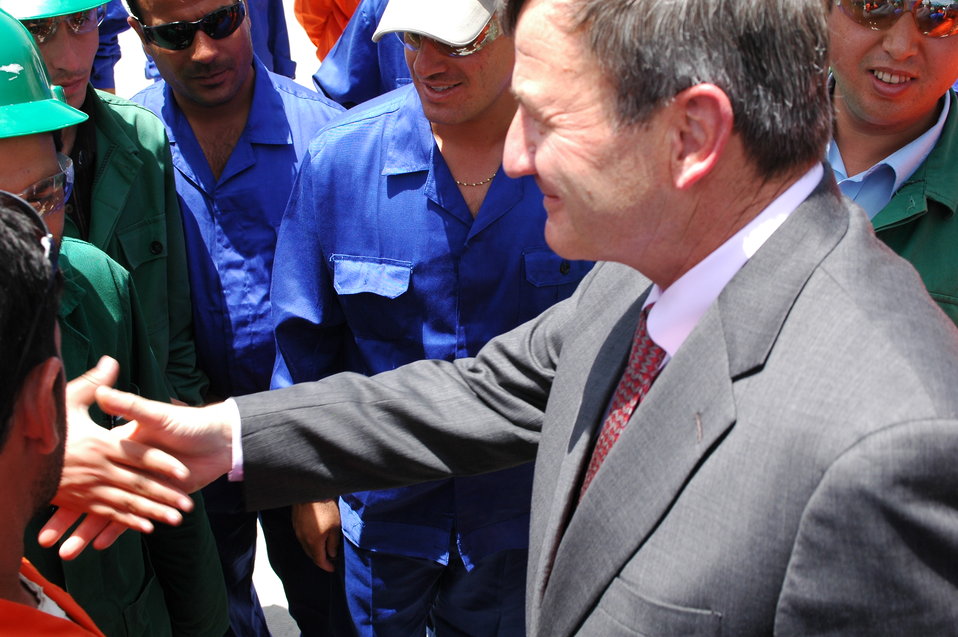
105 MW Tarakhil Power Plant Handover